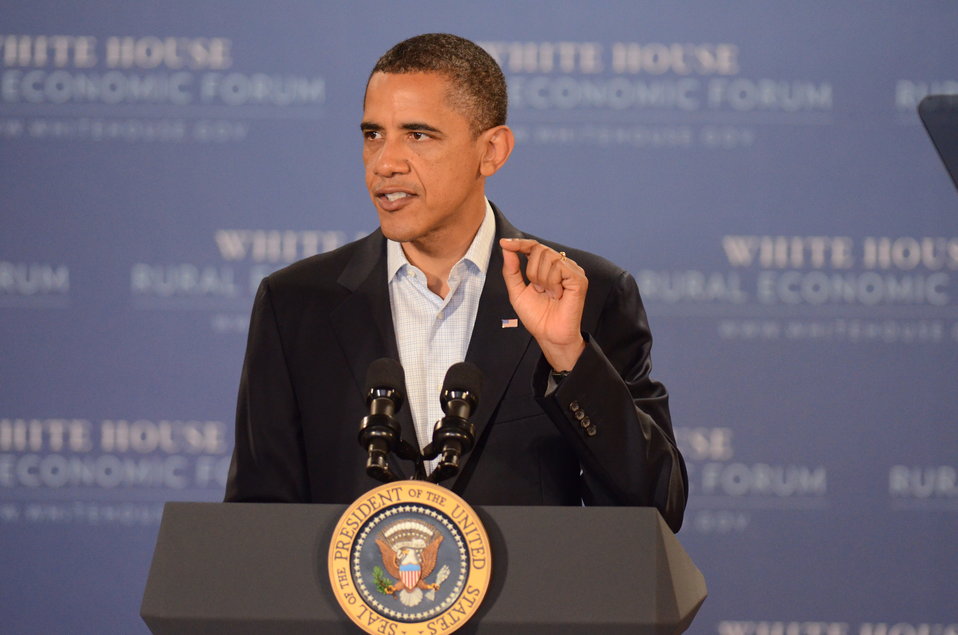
President Barack Obama speaking at the Northeast Iowa Community College, for a White House Rural Economic Forum on Tuesday, Aug. 16, 2011. The President’s visit will focus on agriculture’s contribution to the national economy, and how to create more jobs in rural America.